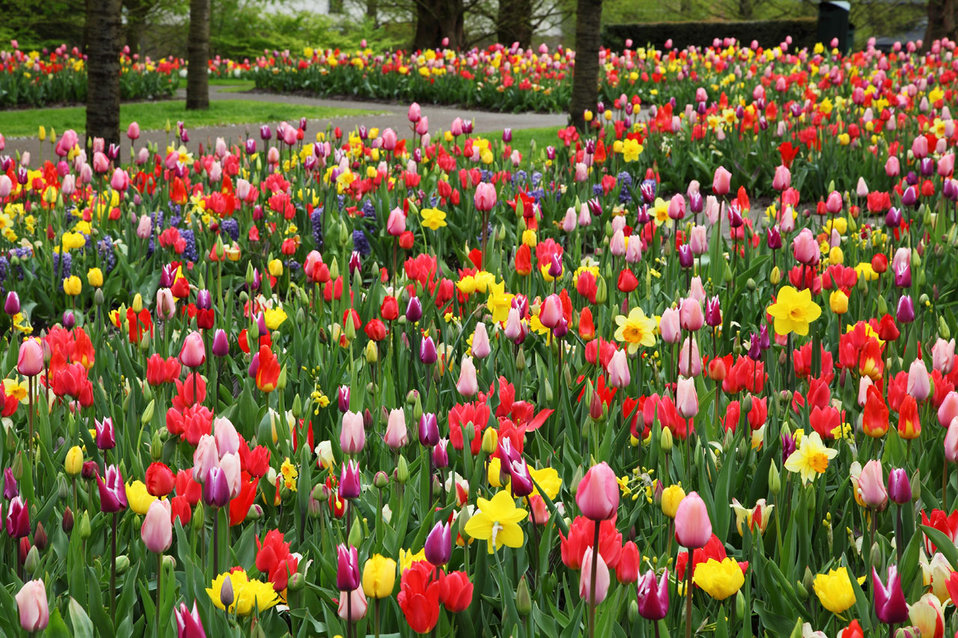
Colorful tulips and daffodils in keukenhof gardens.